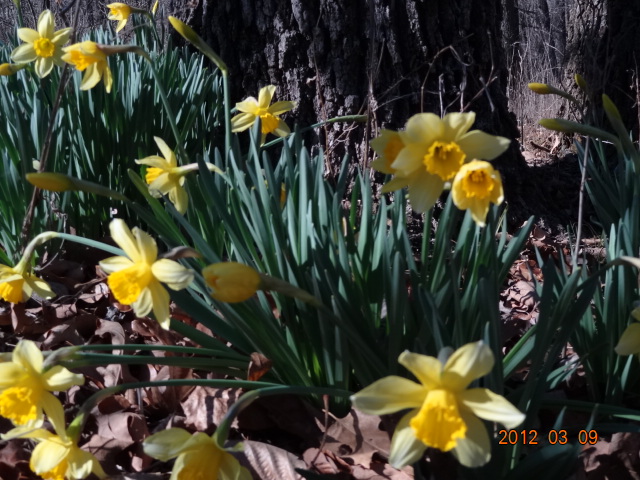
Homestead Remnants

On the Marais des Cygnes National Wildlife Refuge, you can find remnants of historic homesites. These non-native daffodils represent an area where a family home possibly was located in the late 1800's or early 1900's.